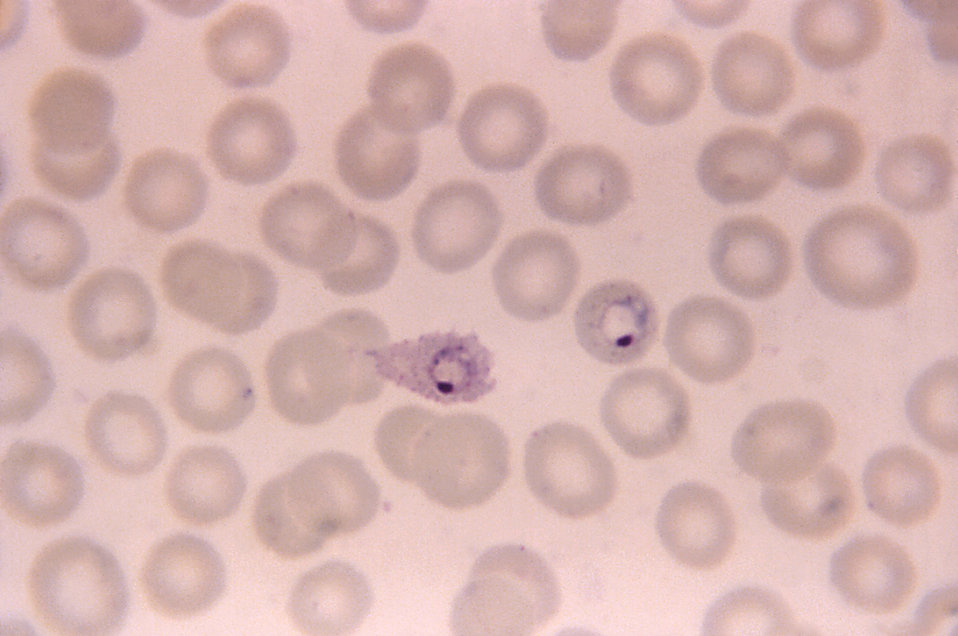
This thin film micrograph depicts two P. ovale ring form trophozoites; one in rounded RBC, and one in oval RBC.